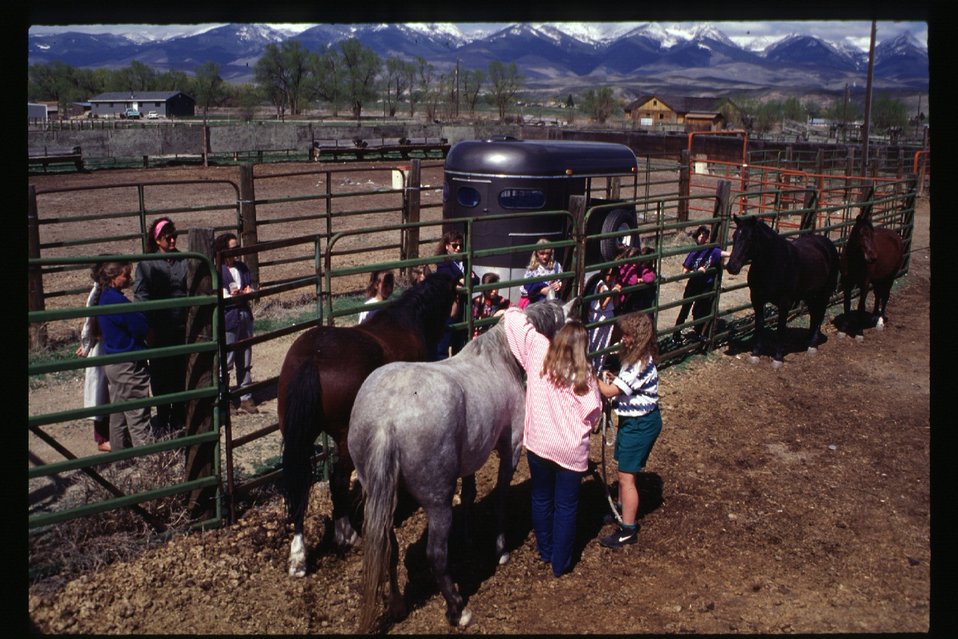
Wild Horse and Burro Adoption Program Gathering Roundup Corral Four Rivers Field Office LSRD Lower Snake River District